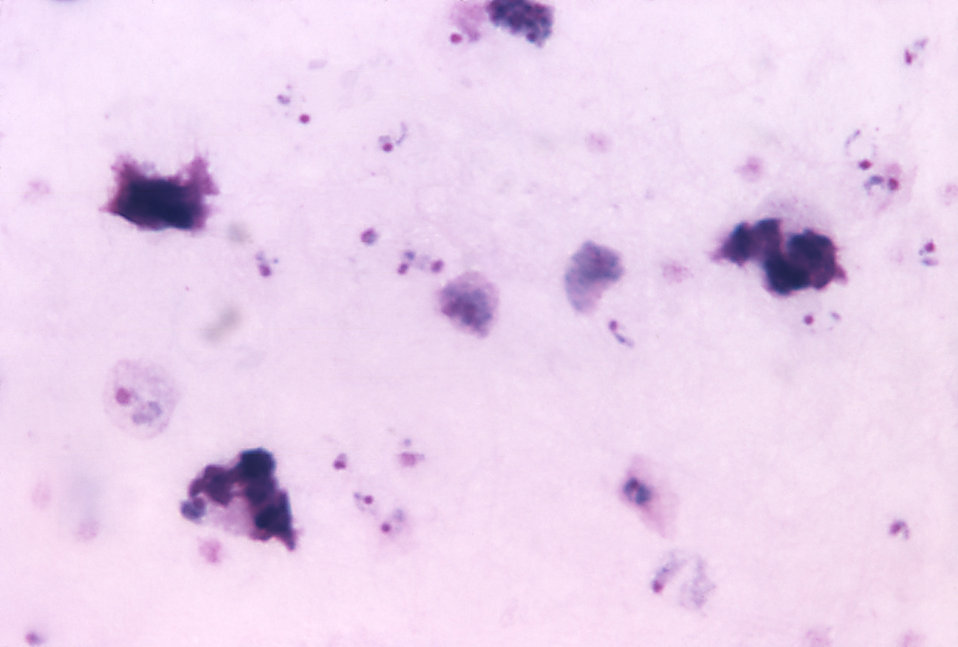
This thick film smear revealed an immature P. vivax schizont, rings, and growing trophozoites, Giemsa stain; Mag. 1125X.